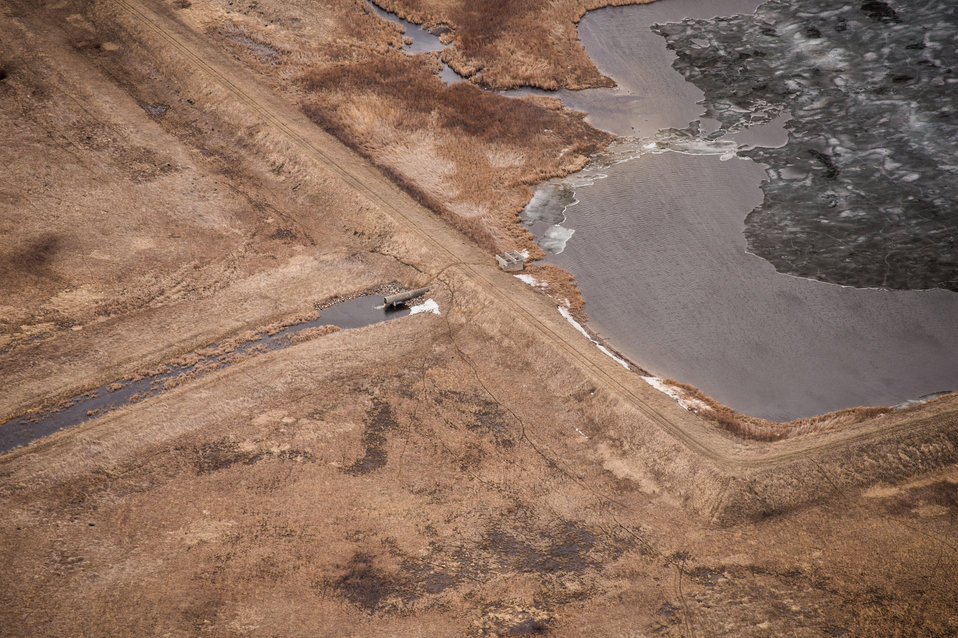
Burnham Creek Dam adjacent to the Department of the Interior (DOI) Glacial Ridge National Wildlife Refuge with U.S. Department of Agriculture (USDA) Wetland Reserve Program and Public Law PL83-566 Small Watershed Program participants’ land in Polk County, MN, on Tuesday, April 30, 2013. USDA Photo by Lance Cheung.

For information please see:

USDA Red River Basin Initiative (RRBI) www.mn.nrcs.usda.gov/news/features13/RRBI.html
Wetlands Reserve Program www.nrcs.usda.gov/wps/portal/nrcs/main/national/programs/...
Public Law PL83-566 (PL-566) Small Watershed Program www.nrcs.usda.gov/wps/portal/nrcs/detail/nd/technical/?ci...